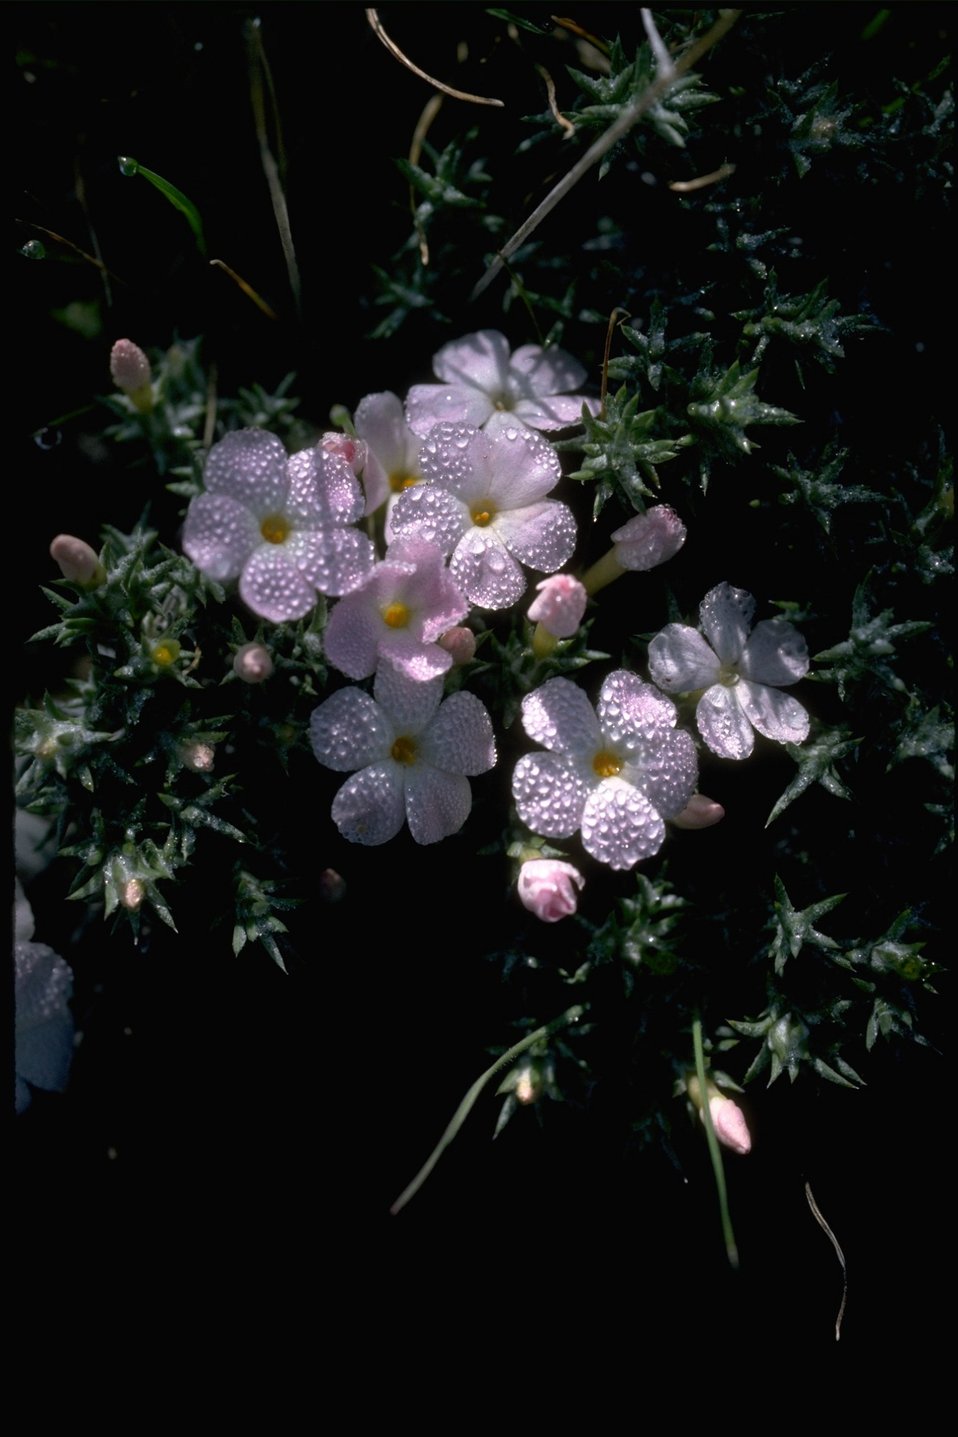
Diffuse phlox (Phlox difussa) from the north end of Steens Mountain in Southeastern Oregon.